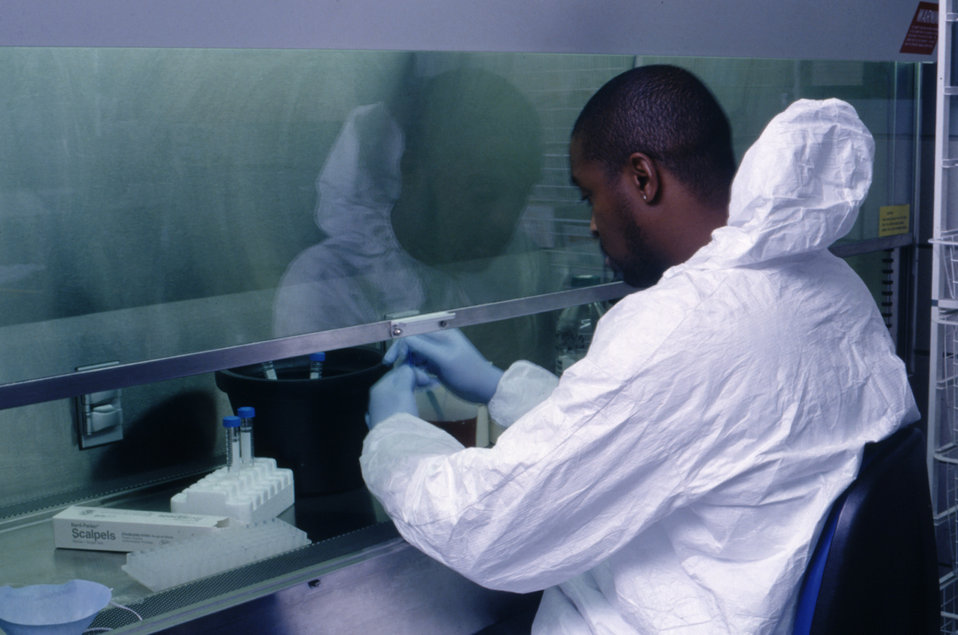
This CDC laboratory worker, wearing a protective suit and gloves, is storing specimens in test tubes during a lab experiment.